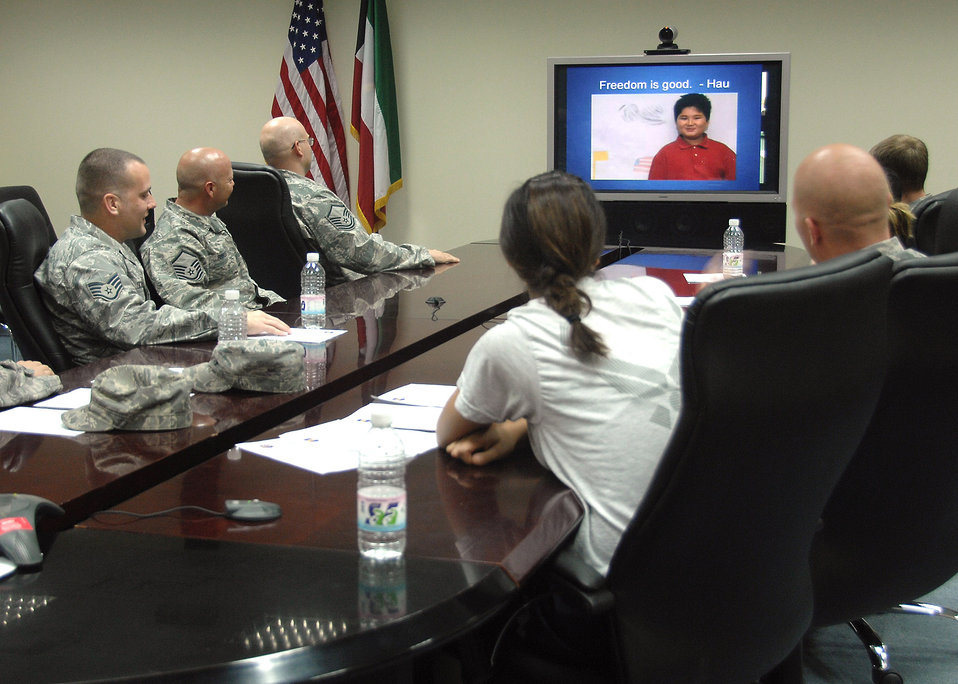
Sharing experiences with 'video pen pals'

Members of the 386th Expeditionary Logistics Readiness Squadron Aerial Port flight at an air base in Southwest Asia interact with third graders during a video teleconference session Nov. 12 with children from Mustang Valley Elementary school in Mustang, Okla. The children read poems they had written about Veterans Day, and asked questions of the Airmen about their experiences while being deployed in support of operations Iraqi Freedom and Enduring Freedom. The students and teachers at the school are planning to send care packages to the Airmen, thanking them for their service.